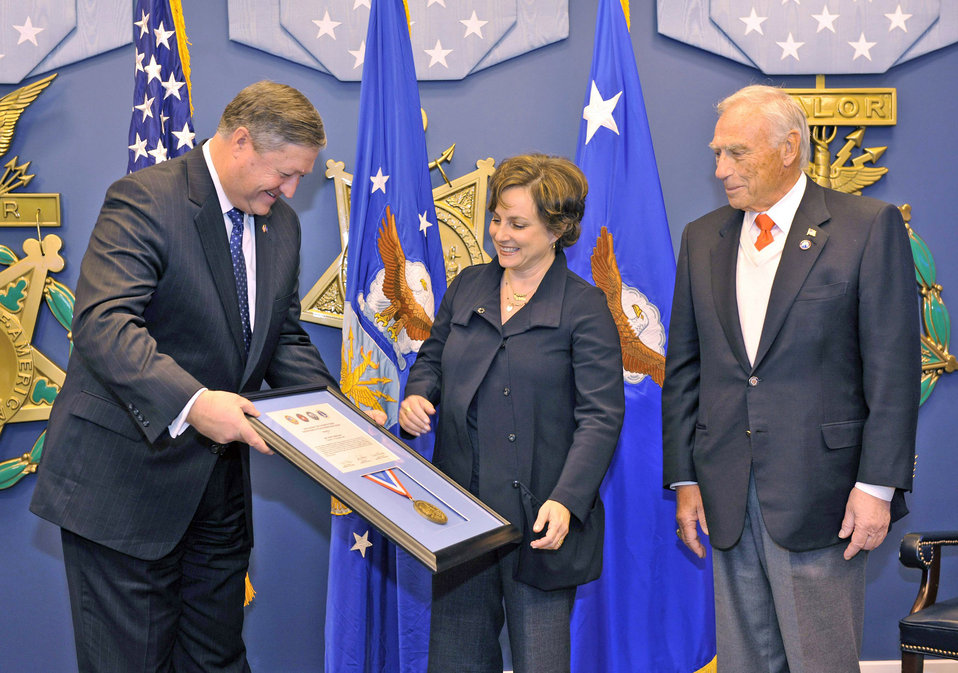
Secretary Donley announces location of newest Fisher House

Secretary of the Air Force Michael Donley (left) presents a citation and medal to Nancy Berglass while Arnold Fisher looks on during a ceremony to present her the Zachary and Elizabeth Fisher Distinguished Civilian Humanitarian Award at the Pentagon's Hall of Heroes Jan. 28, 2010. The multidepartmental award was established in 1996 and is presented to those exemplifying personal qualities of patriotism, generosity, and selfless dedication to improving the quality of life of members of the armed forces of the United States.